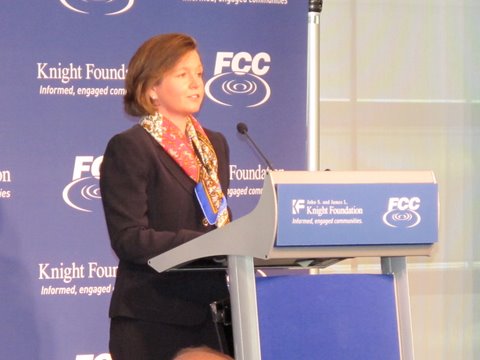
FCC Commissioner Meredith Attwell Baker addresses America's Digital Inclusion Summit at The Newseum, March 9, 2010.